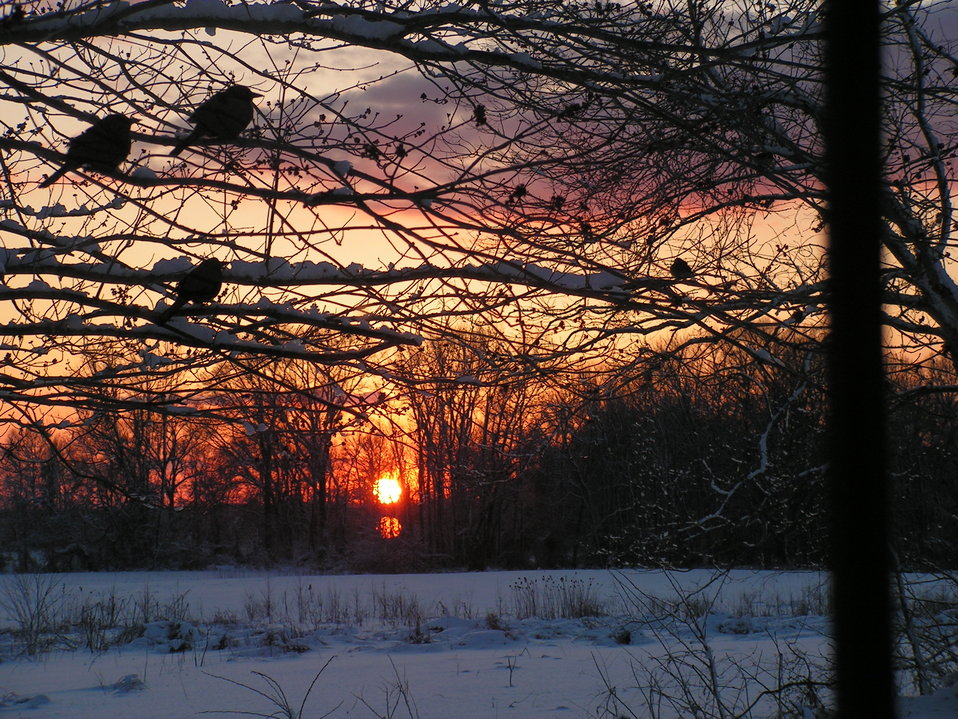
Winter sunset

Rappahannock River Valley National Wildlife Refuge in Virginia.